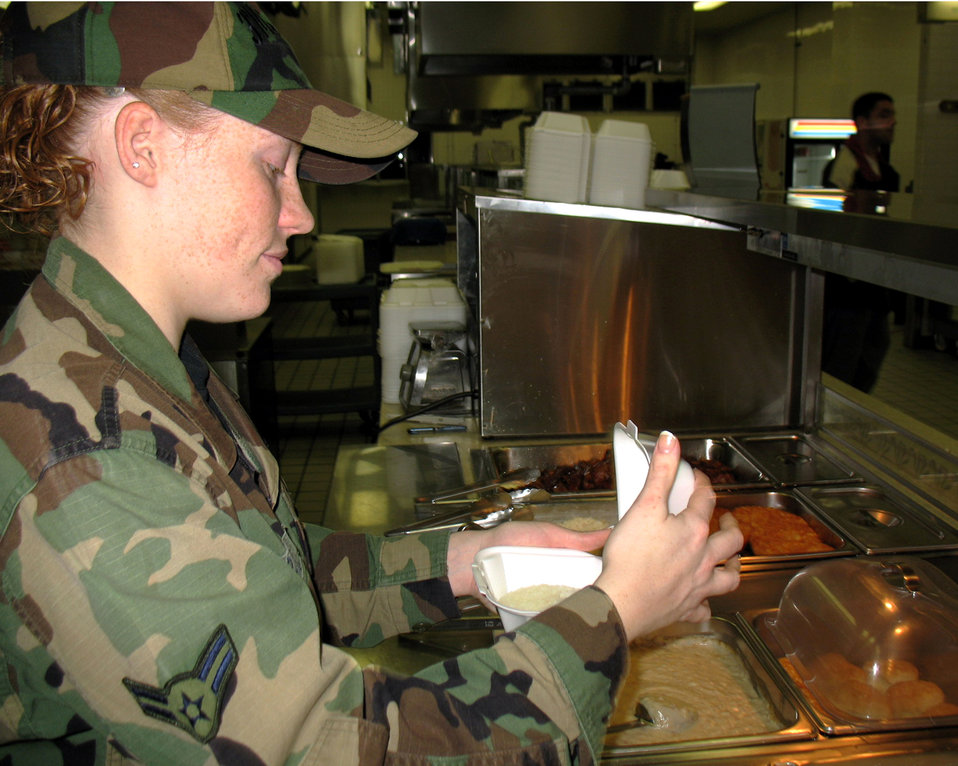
Serving through the season: Airman 1st Class Christina Grable

Airman 1st Class Christina Grable is celebrating her Christmas by cooking at the Samurai Cafe at Yokota Air Base, Japan.